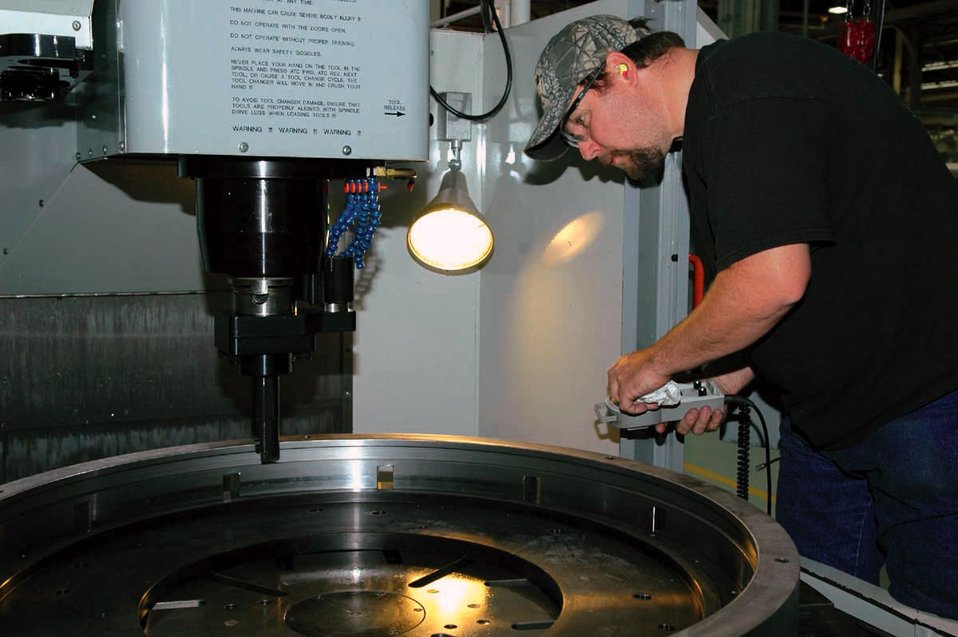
Tinker unit designs new welding process for B-2

John Gee prepares a vertical turning center machine to bore the inside diameter on a fixture that holds aircraft parts. Mr. Gee is a toolmaker with the 547th Propulsion Maintenance Squadron.